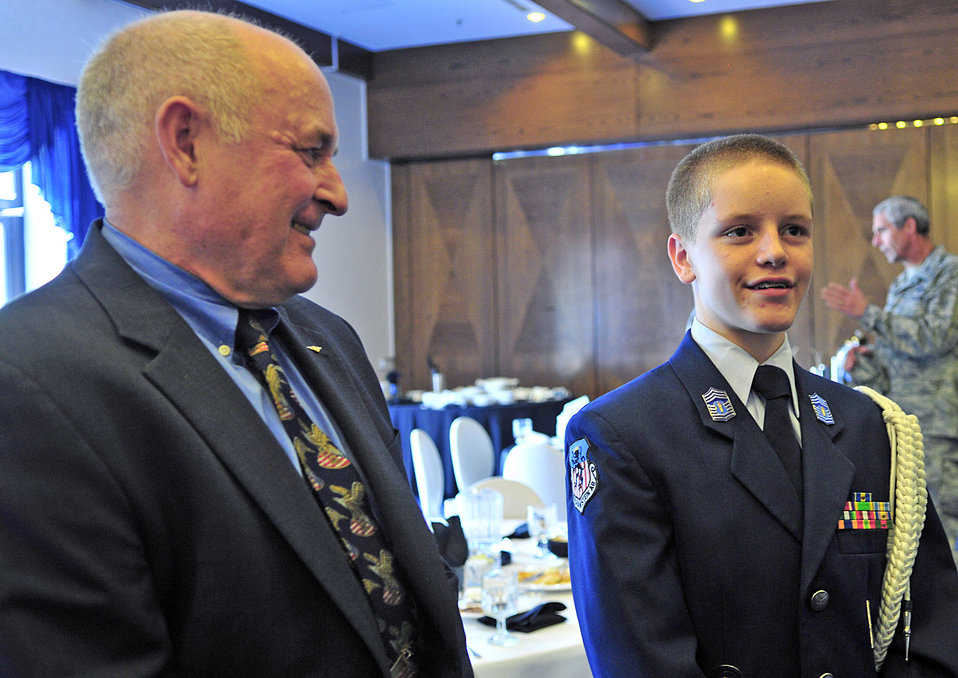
Former POW inspires audience with experiences, wisdom

Former prisoner of war, retired Navy Capt. David Hoffman and Christian Britton talk with other servicemembers during the POW/missing in action luncheon Sept. 17, 2010, at Ramstein Air Base, Germany. Christian is Junior ROTC cadet and son of Senior Master Sgt. Vince Britton, 435th Contingency Response Group superintendent of contingency operations.